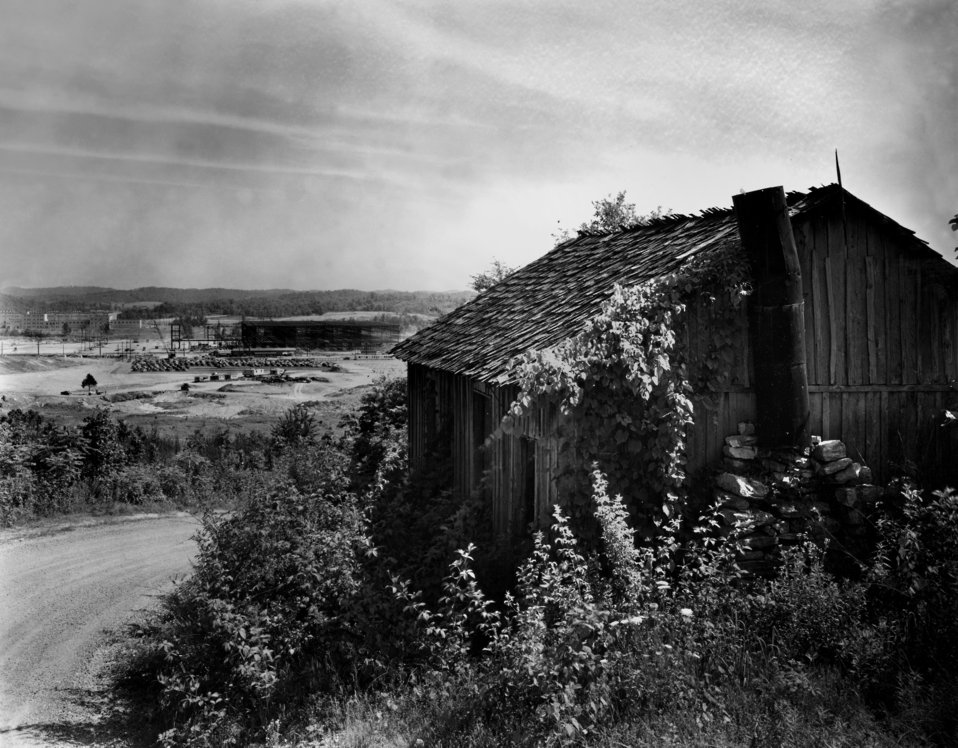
Early Construction K-25 plant with one of original houses in the Oak Ridge

MED245 DOE photo by Ed Westcott

Early Construction K-25 plant with one of original houses in the Oak Ridge Tennessee area 1942